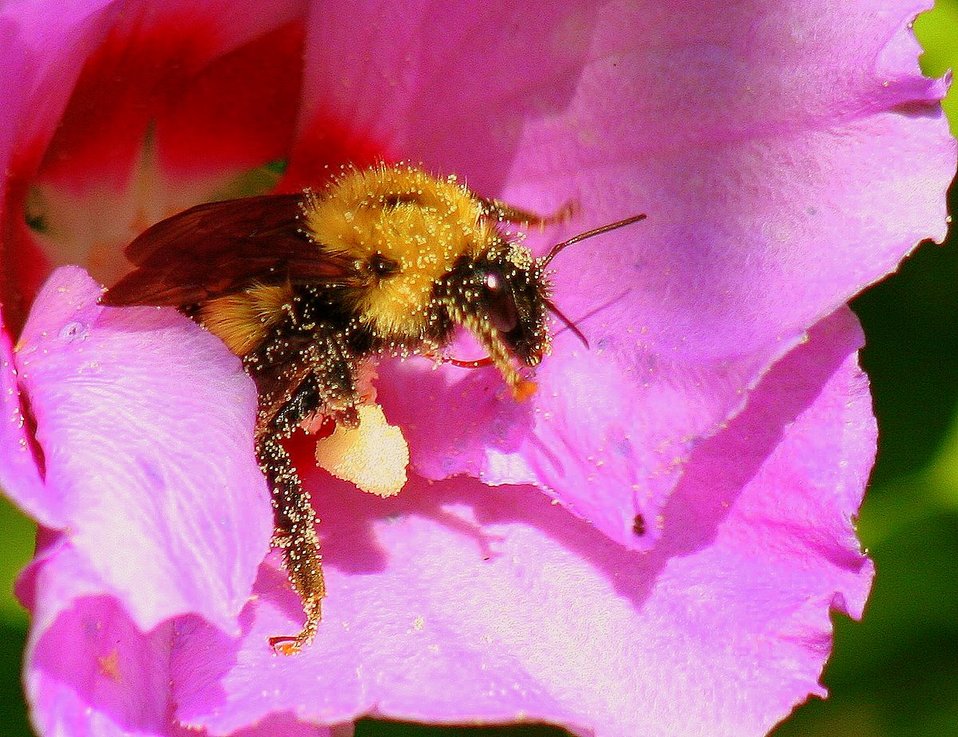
Uploaded by request of Teresa Pratt

Taken at Middle Creek Wildlife Management Area, Kleinfeltersville, PA

I would like to enter this photo under “Protecting the environment”, because this photo demonstrates a bee carrying pollen from flower to flower, not only literally, but stuck to it’s body! People need to realize that our ecosystem is fragile and bee’s are the glue that hold our agriculture system together.